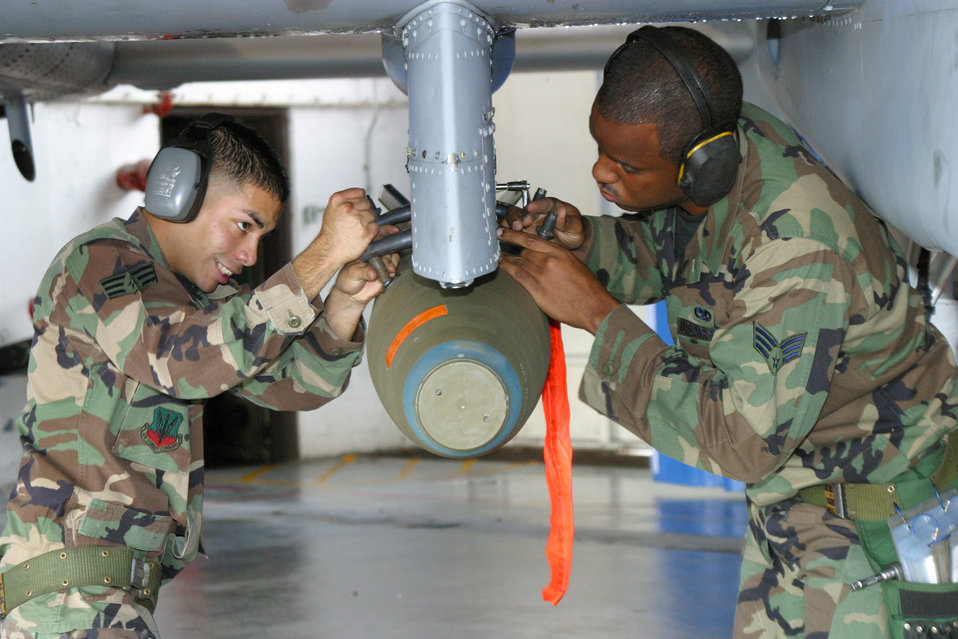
Arms up!

POPE AIR FORCE BASE, N.C. -- Senior Airmen Oscar Mejia and Doug Parker load a MK-82 high-drag 500-pound bomb onto an A-10 Thunderbolt II during a load crew competition here Dec. 10. The Airmen are assigned to the 23rd Aircraft Maintenance Squadron.